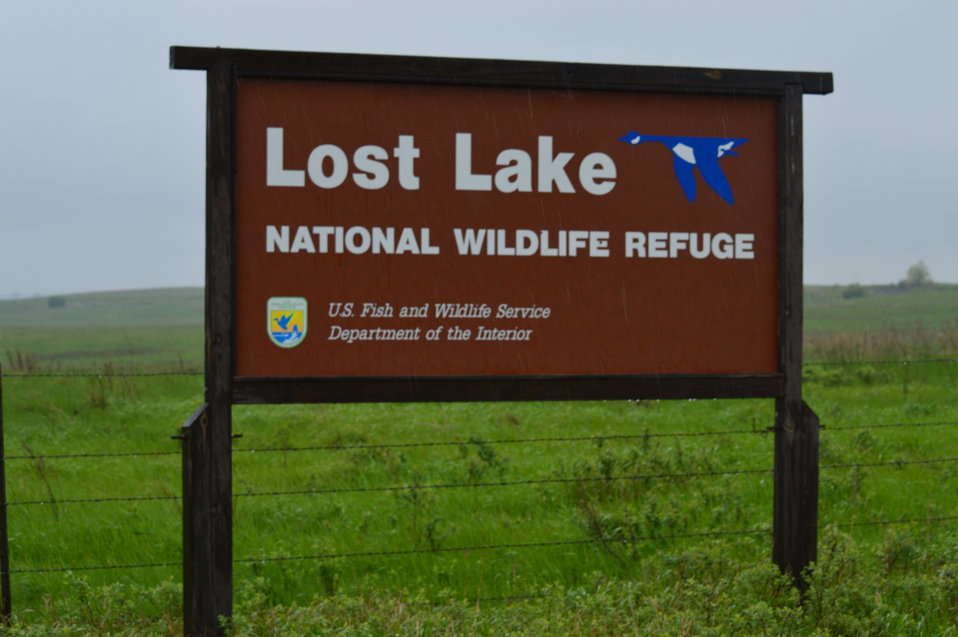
Lost Lake NWR sign

Scenery and wildlife at Lost Lake National Wildlife Refuge in North Dakota.